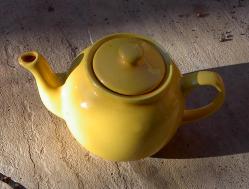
A yellow ceramic teapot against a stone floor, taken by CGS. Public domain.
en:Commons:Category:Yellow en:Commons:Category:Teapots